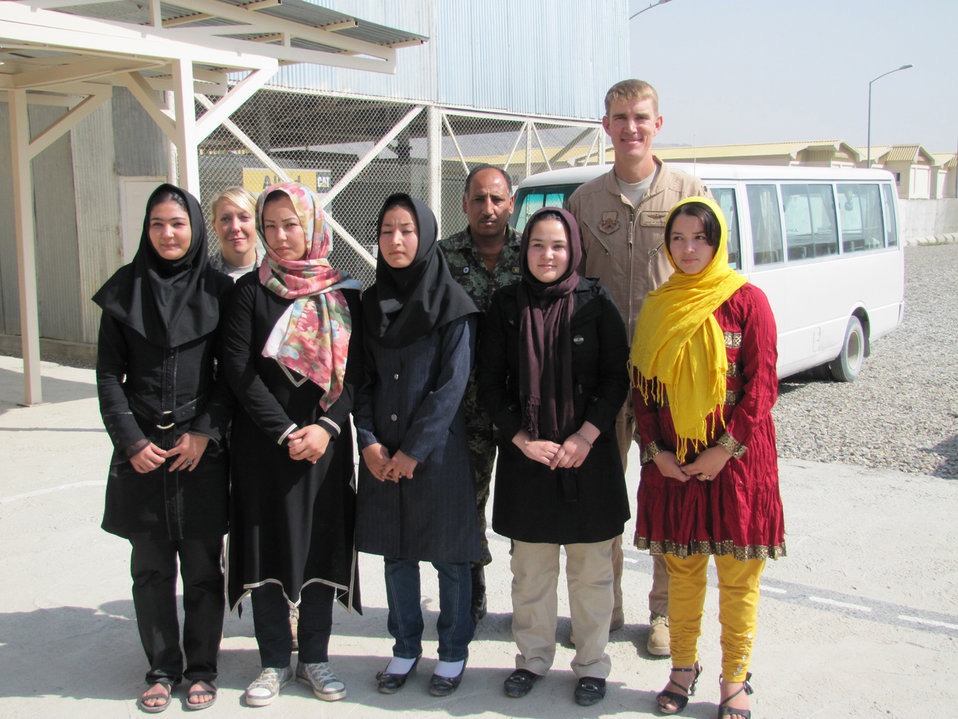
New Afghan air force female lieutenants arrive at the Thunder Lab

Five newly commissioned female Afghan lieutenants arrive Oct. 12, 2010, at the Thunder Lab in Kabul, Afghanistan.